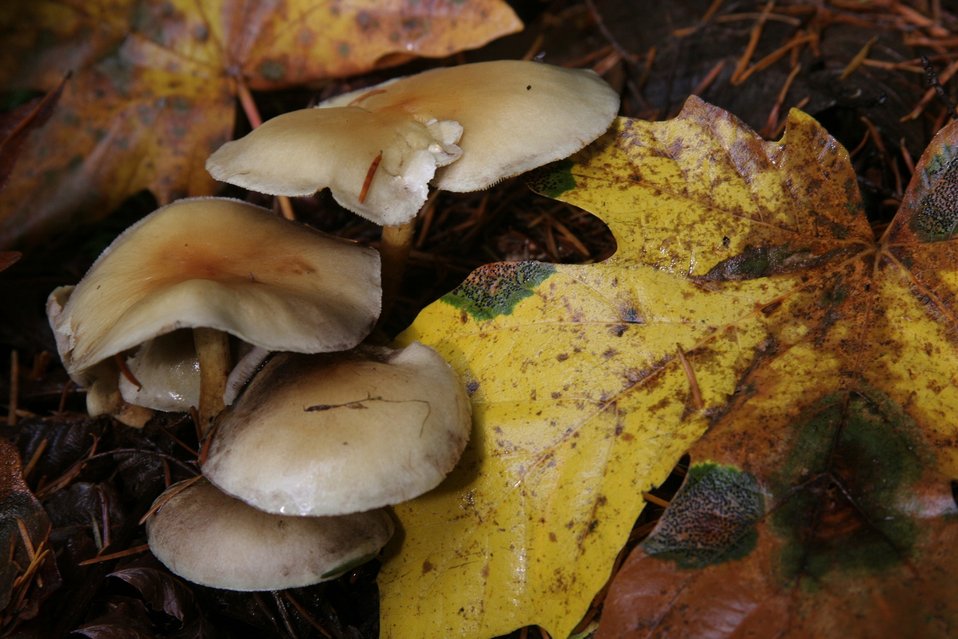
Fall colors at BLM's Wildwood Recreation Site.